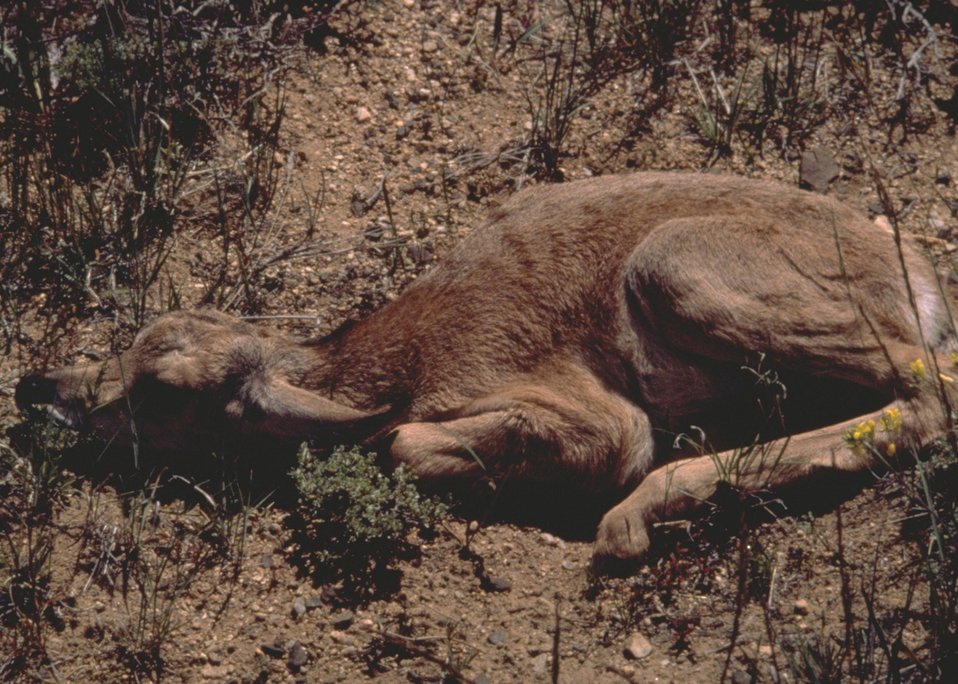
Fawn resting on the ground.